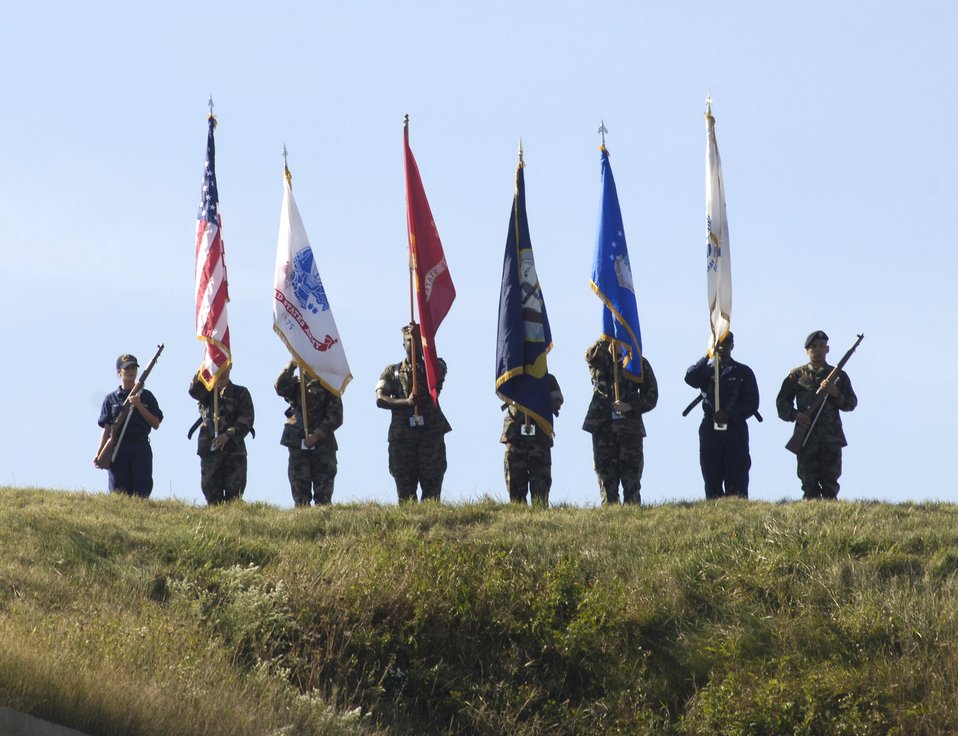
'Old Ironsides' hosts Medal of Honor recipients

A New England contingent of Air Force, Army, Navy, Marines and Coast Guard members pay their respects to the more than 70 Medal of Honor recipients onboard the USS Constitution, the oldest commissioned warship afloat. The Medal of Honor recipients were there for a turn-around cruise and Medal of Honor flag presentation Sept. 30 in Boston Harbor. The Medal of Honor is the country's highest military honor, awarded for acts of valor above and beyond the call of duty.